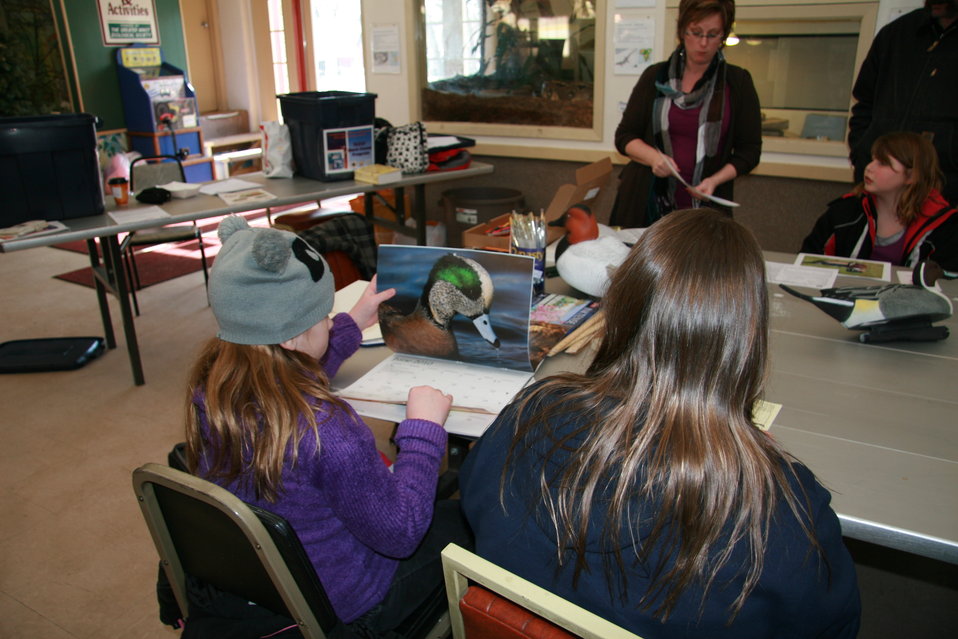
Preparing for the Jr. Duck Stamp Contest - North Dakota

Preparation for the Junior Duck Stamp Contest - researching and observing fundamental principles of anatomy and environmental science.